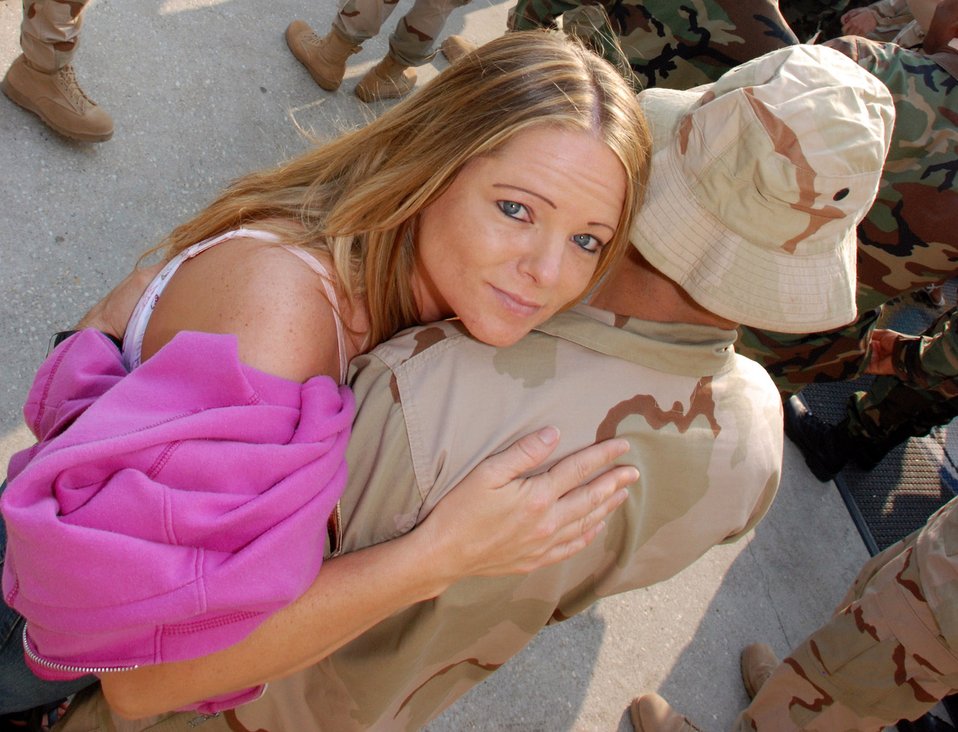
Eglin Airmen return from deployment

Jeni Zayas spends a few longed-for moments with her husband, Master Sgt. Roberto Zayas, shortly after he arrived home May 24 to Eglin Air Force Base, Fla., from a deployment to Southwest Asia. Family members gathered at Eglin AFB to welcome home more than 175 members of the 728th Air Control Squadron from a deployment in support of Operation Iraqi Freedom.